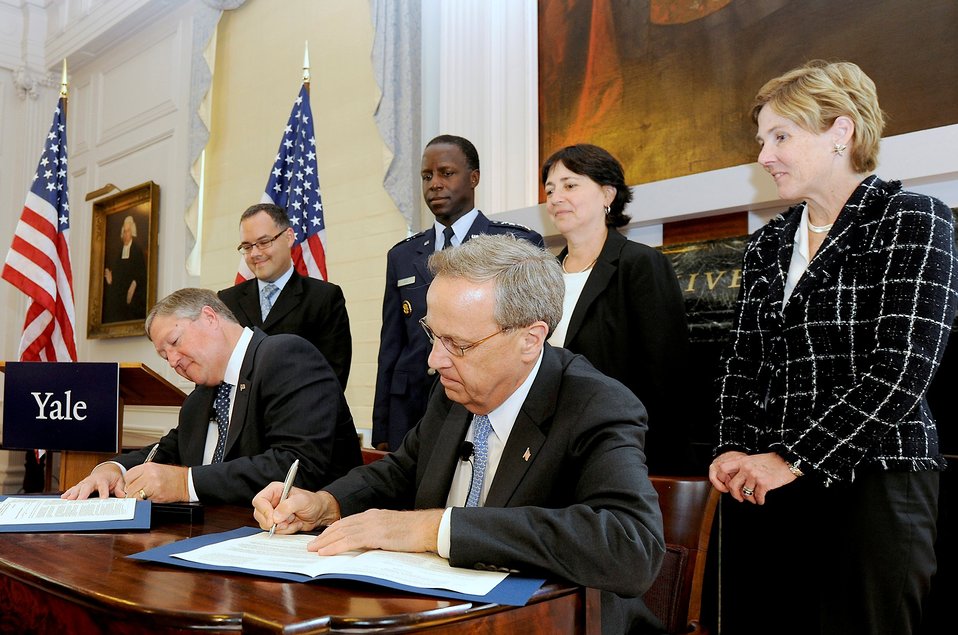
SECAF at Yale ROTC detachment

Secretary of the Air Force Michael Donley and Yale University president
Richard Levin sign an agreement to establish an Air Force ROTC detachment at
Yale during a signing ceremony at the university's Woodbridge Hall Sept.
12, 2011. Classes for cadets will begin on Yale's campus in the fall of
2012.